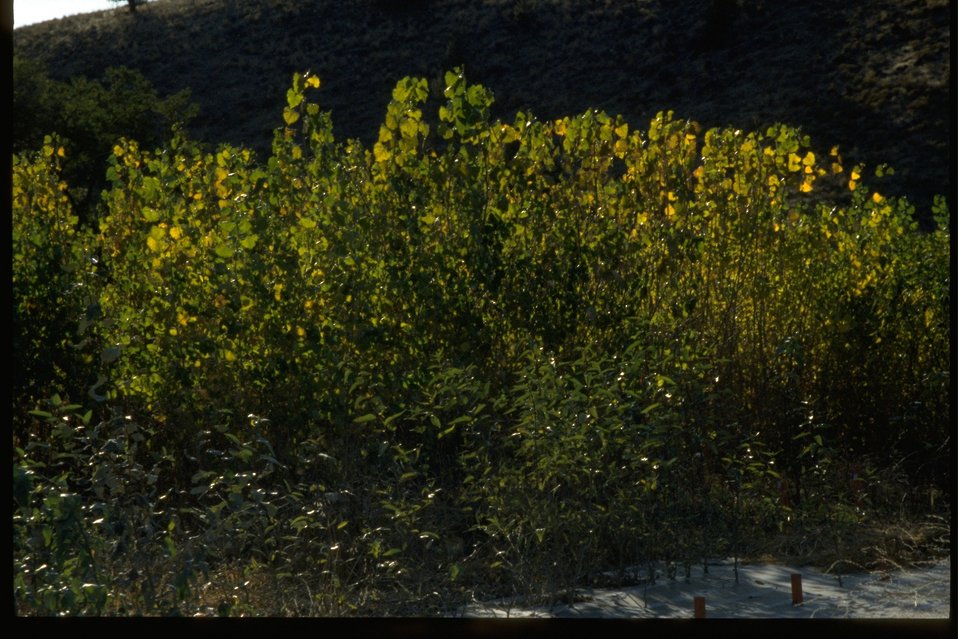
Cottonwood plantation near Clarno Road. Ground cloth under trees.